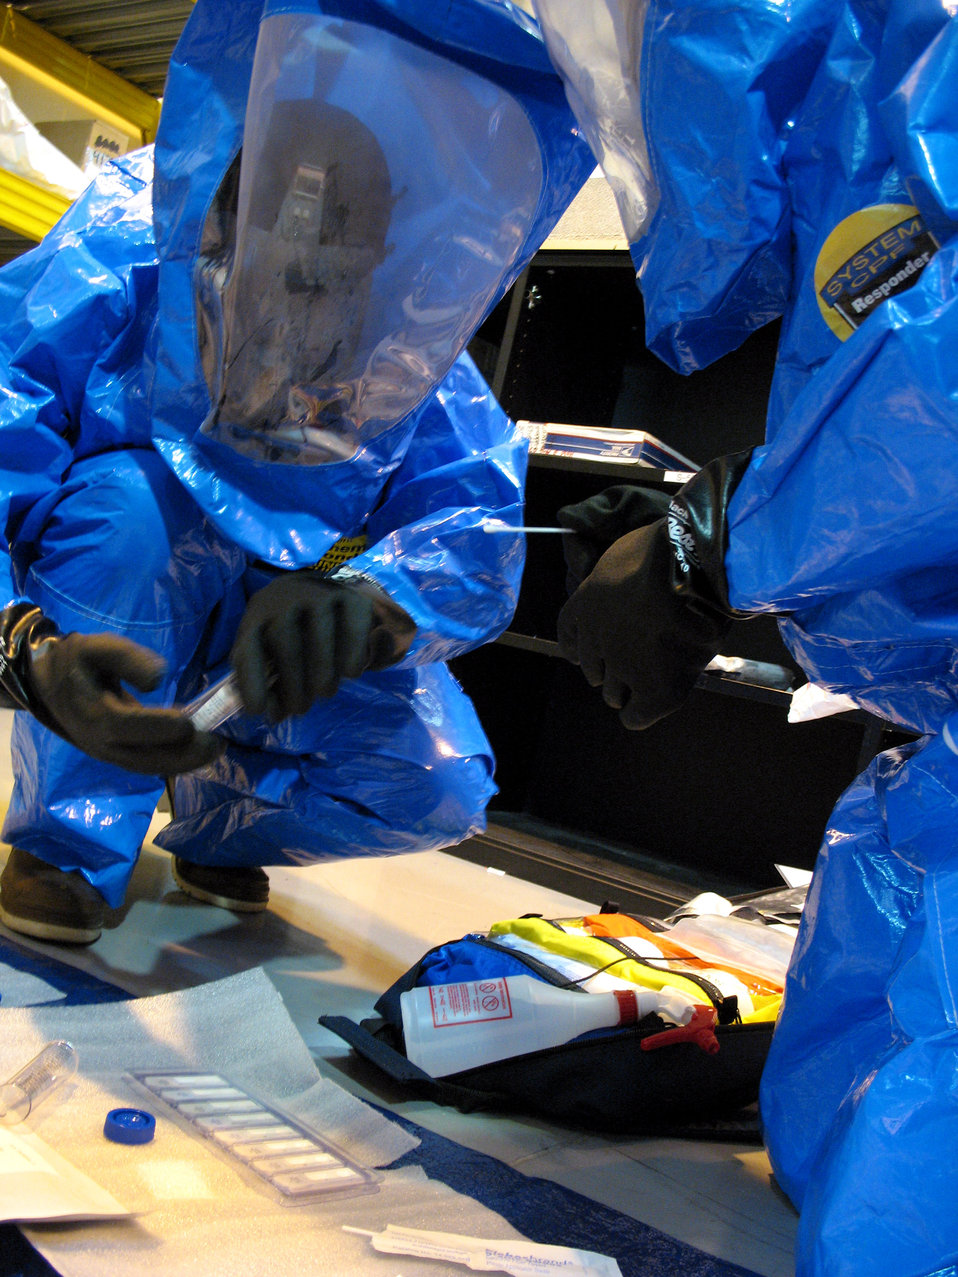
Emergency responders test readiness with 'mystery package'

Senior Airman Gadiaga Mouhamed (left) and Tech. Sgt. Steven Cuntiff check a suspicious package for lethal chemicals April 20 at Aviano Air Base, Italy. Airman Mouhamed and Sergeant Cuntiff are assigned to the 31st Aerospace Medical Squadron.